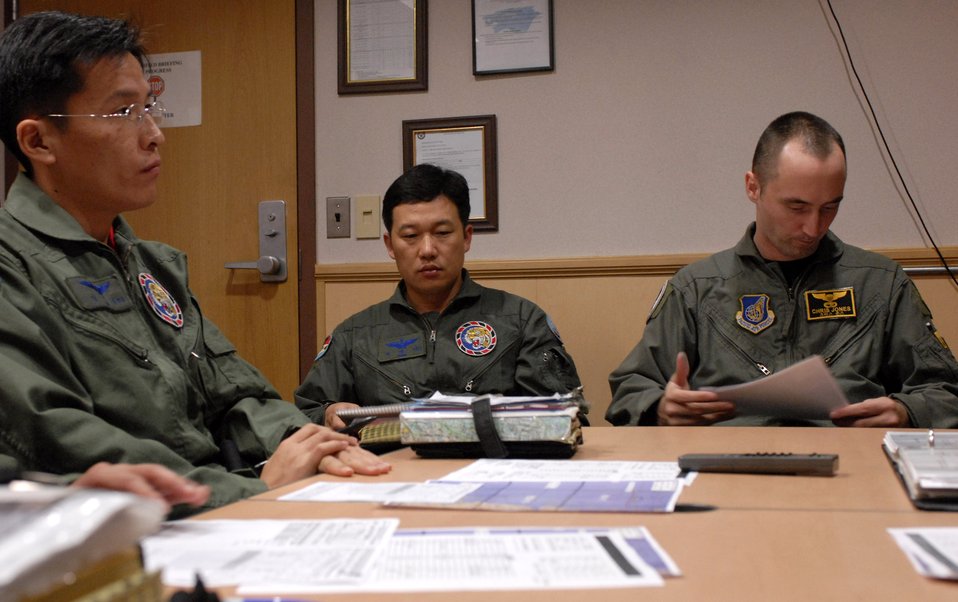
8th FW commander, ROKAF fly in training mission

Capt. Yim Chang-soon, weapons officer and Maj. Park Dae-seo, director of operations from the 111th Fighter Squadron and Capt. Christopher Jones, 80th Fighter Squadron pilot, prepare for a flight mission brief here Nov. 14. ROKAF pilots and Wolf Pack pilots trained together on a joint mission to give pilots from both countries a chance to work together and hone their warfighting skills.